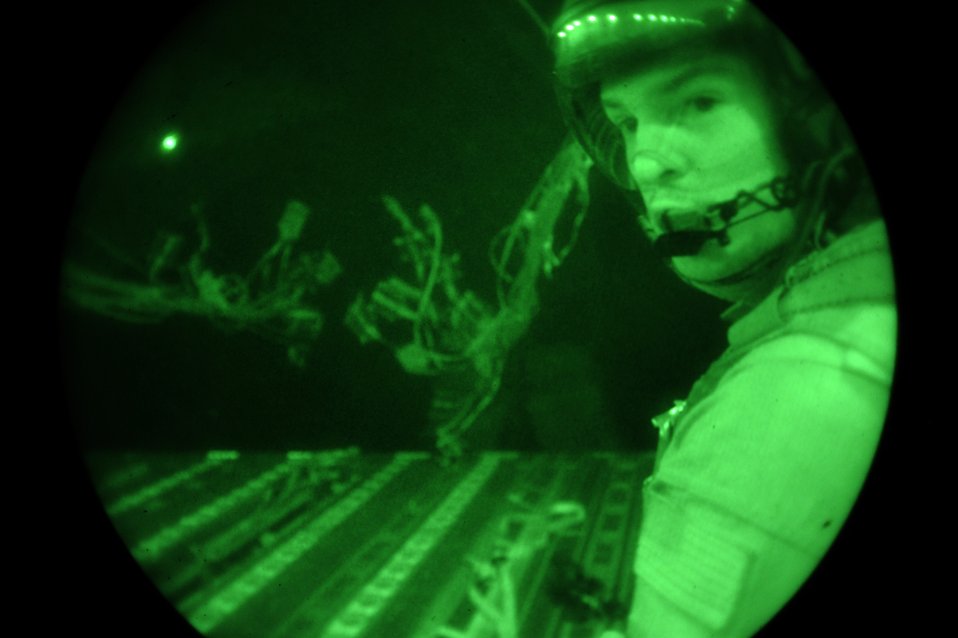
Supply drop in Afghanistan

Senior Airman Bryce Kester monitors supplies being dropped from a C-17 Globemaster III to a forward operating base in Afghanistan, Aug. 27, 2009. Airman Kester is deployed from McChord Air Force Base, Wash.